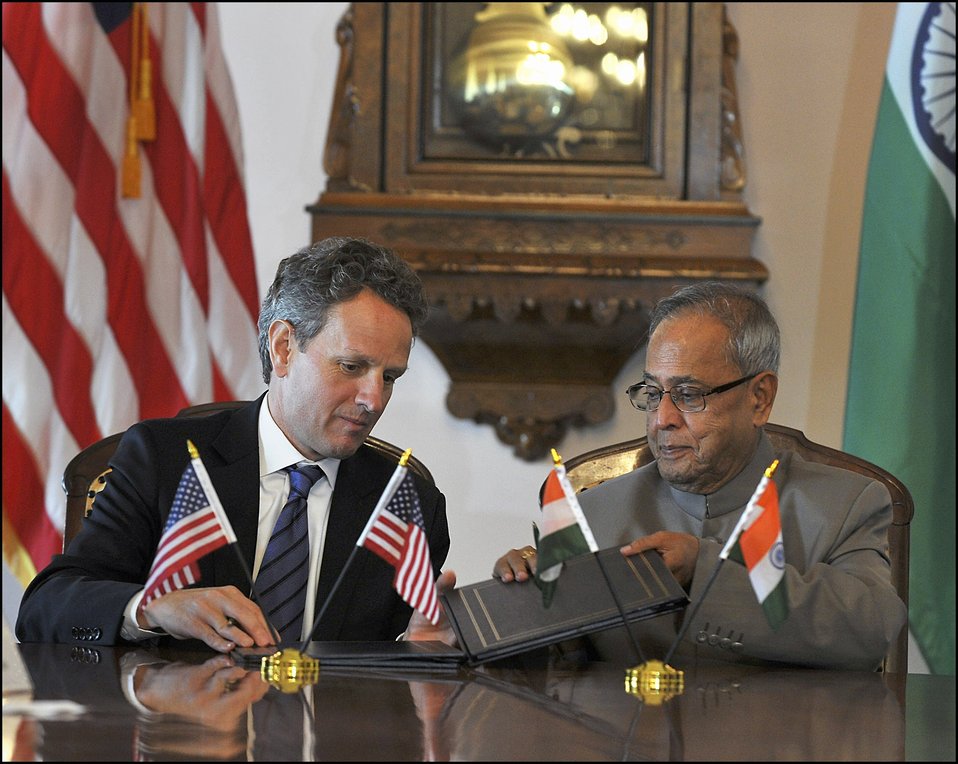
2011 U.S.-India Partnership

Secretary Tim Geithner and Indian Finance Minister Pranab Mukherjee sign a joint statement to conclude the U.S.-India Economic and Financial Partnership meeting in Washington.